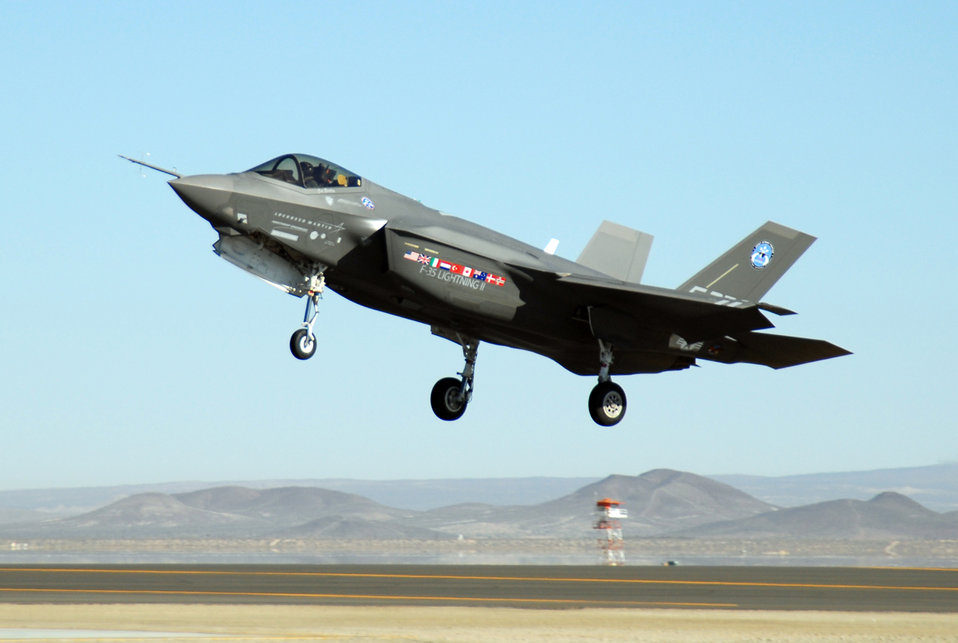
F-35 completes air-start test at Edwards

An F-35 Joint Strike Fighter, marked AA-1, lands Oct. 23 at Edwards Air Force Base, Calif. The F-35 Integrated Test Force staff concluded an air-start test.